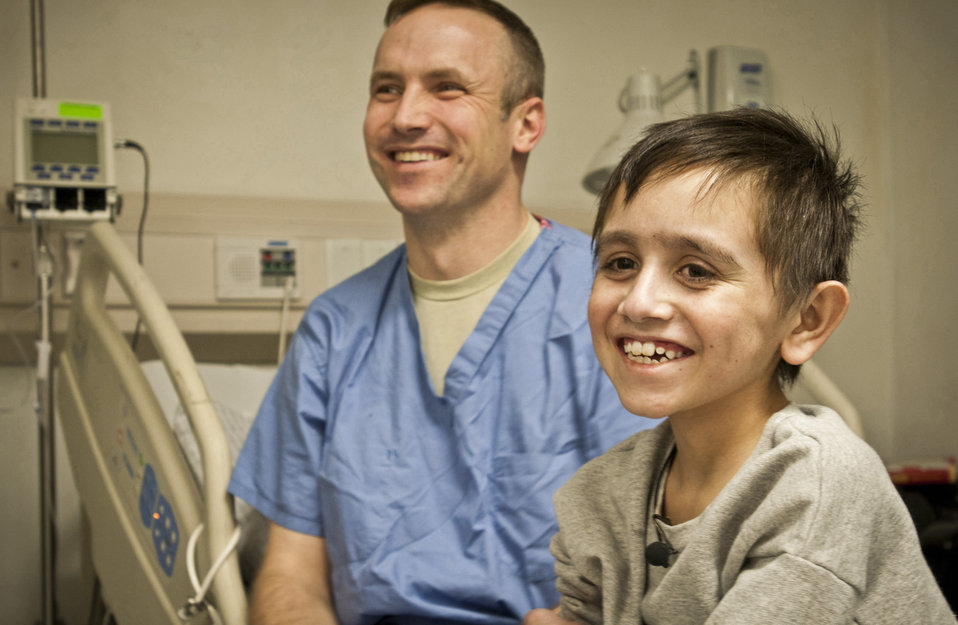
Craig Joint-Theater Hospital's longest resident inspires staff

Najibullah, 10, shares a laugh with Maj. (Dr.) Joe DuBose on Jan. 1, 2012, his 164th day under the hospital's care. Najibullah was severely injured in the stomach July 20, 2011, in Ghazni province. DuBose is the trauma chief at the Craig Joint-Theater Hospital in Afghanistan.